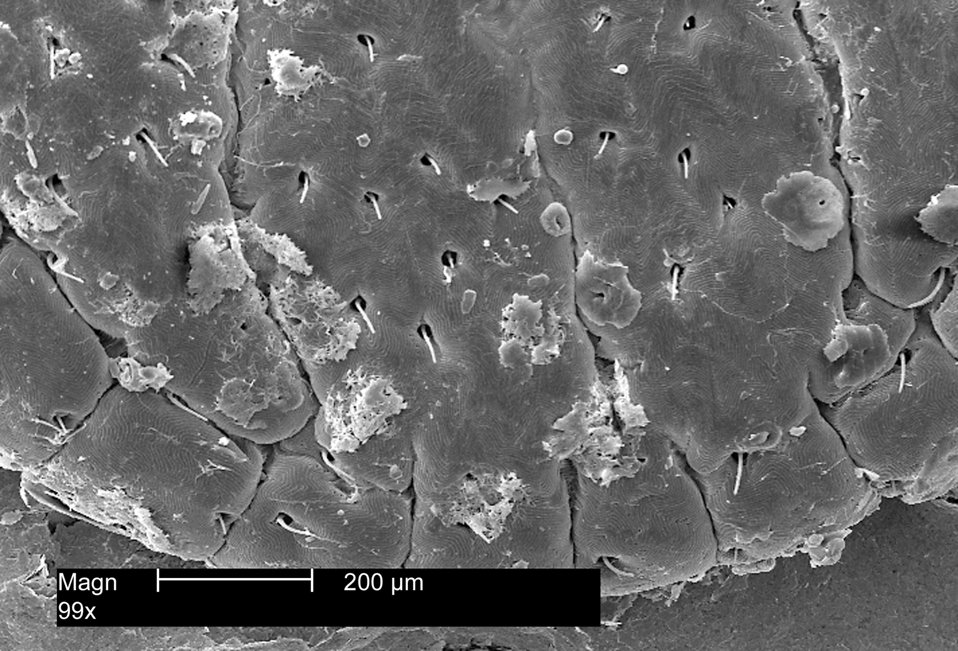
Dorsal view of the back of an American Dog Tick, Dermacentor variabilis, magnified 99x.